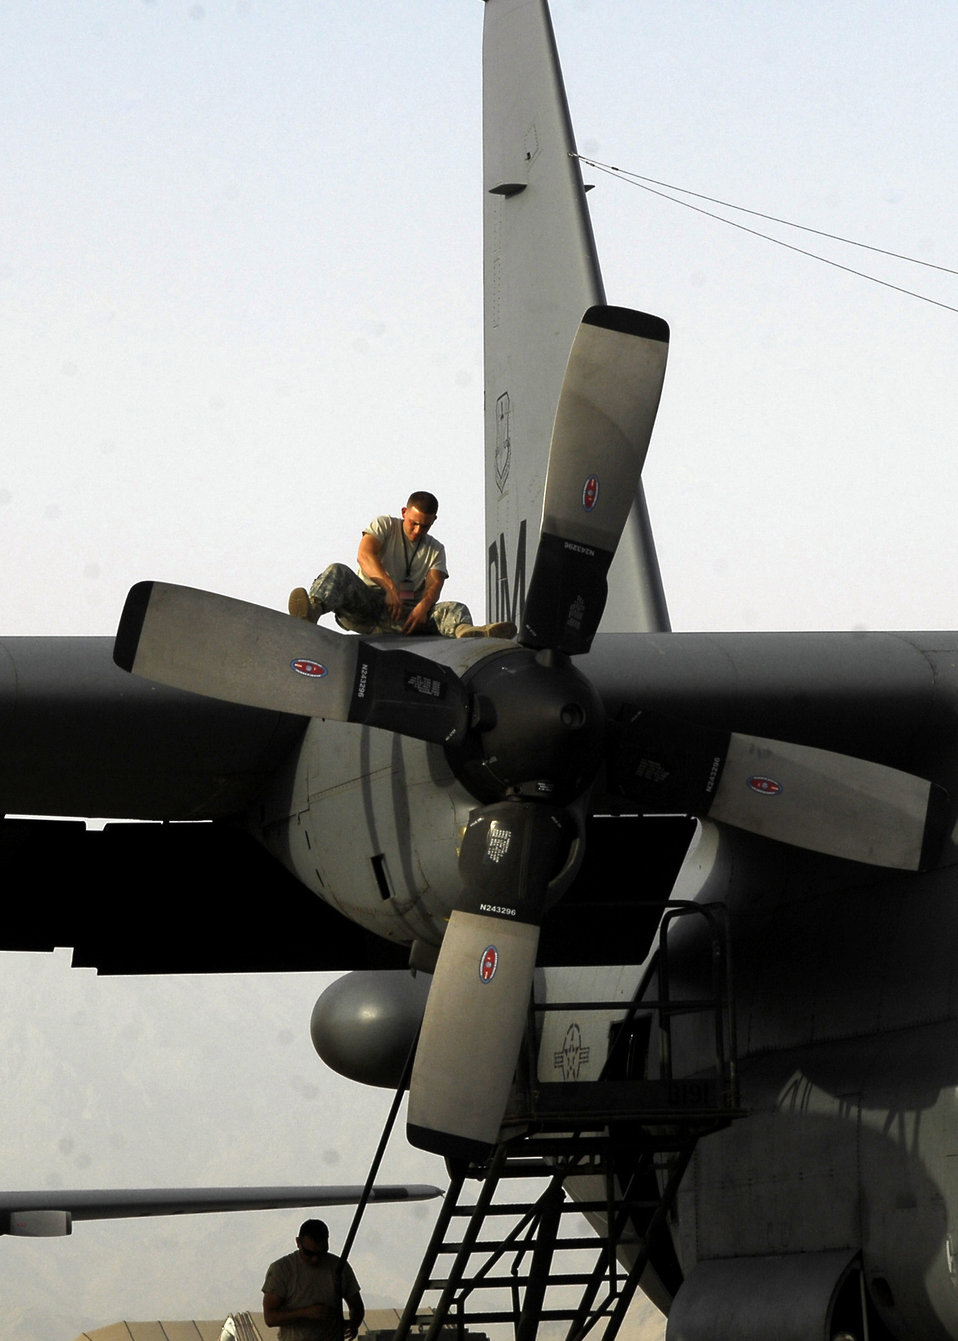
Airmen in EC-130H unit complete 2,000th combat mission

Staff Sgt. Andres Jaramillo and Tech. Sgt. Jose Rodriguez work on the EC-130H Compass Call July 6 at Bagram Airfield, Afghanistan. The EC-130H is an airborne tactical weapon system using a heavily modified version of the C-130 Hercules airframe. Both Airmen are members of the 41st Expeditionary Aircraft Maintenance Unit and are deployed out of Davis-Monthan Air Force Base, Ariz.